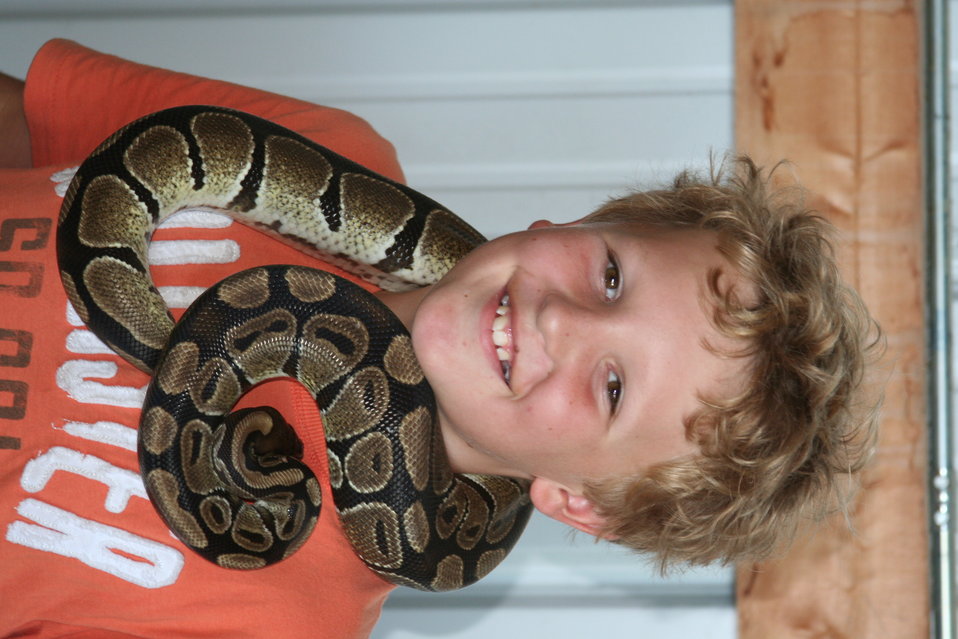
2011 Huron Prairie Fest